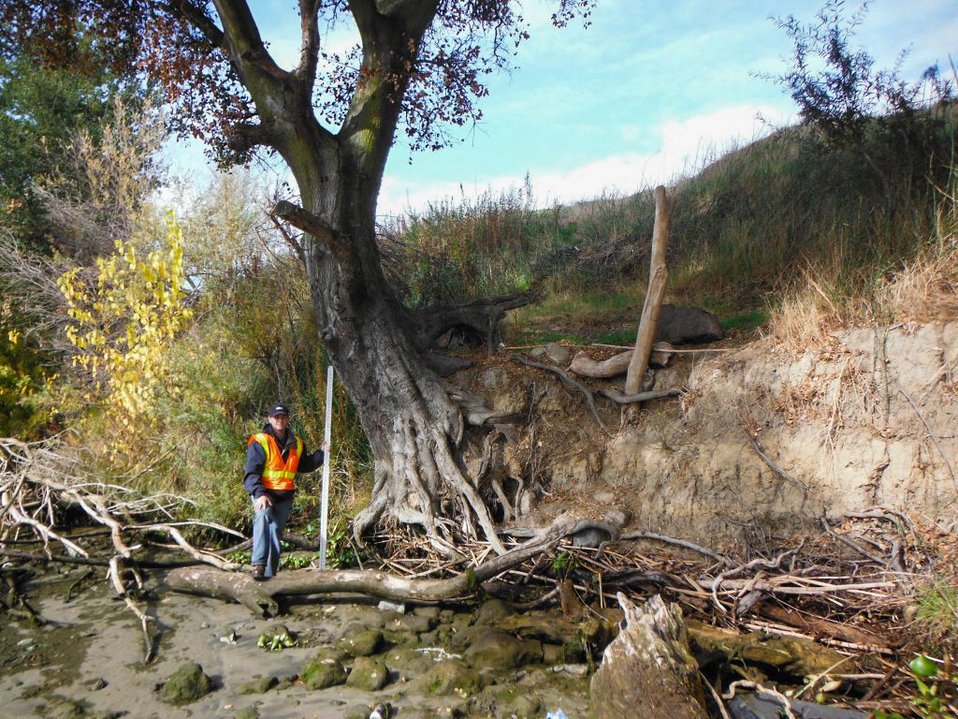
Erosion exposes tree roots on Sacramento River levee

A tree on a Sacramento River levee in Grand Island, Calif., shown during a
U.S. Army Corps of Engineers levee inspection Nov. 16, 2012. Erosion
throughout the tree's root system leaves it vulnerable to toppling,
potentially leaving a dangerous hole in its place. (U.S. Army